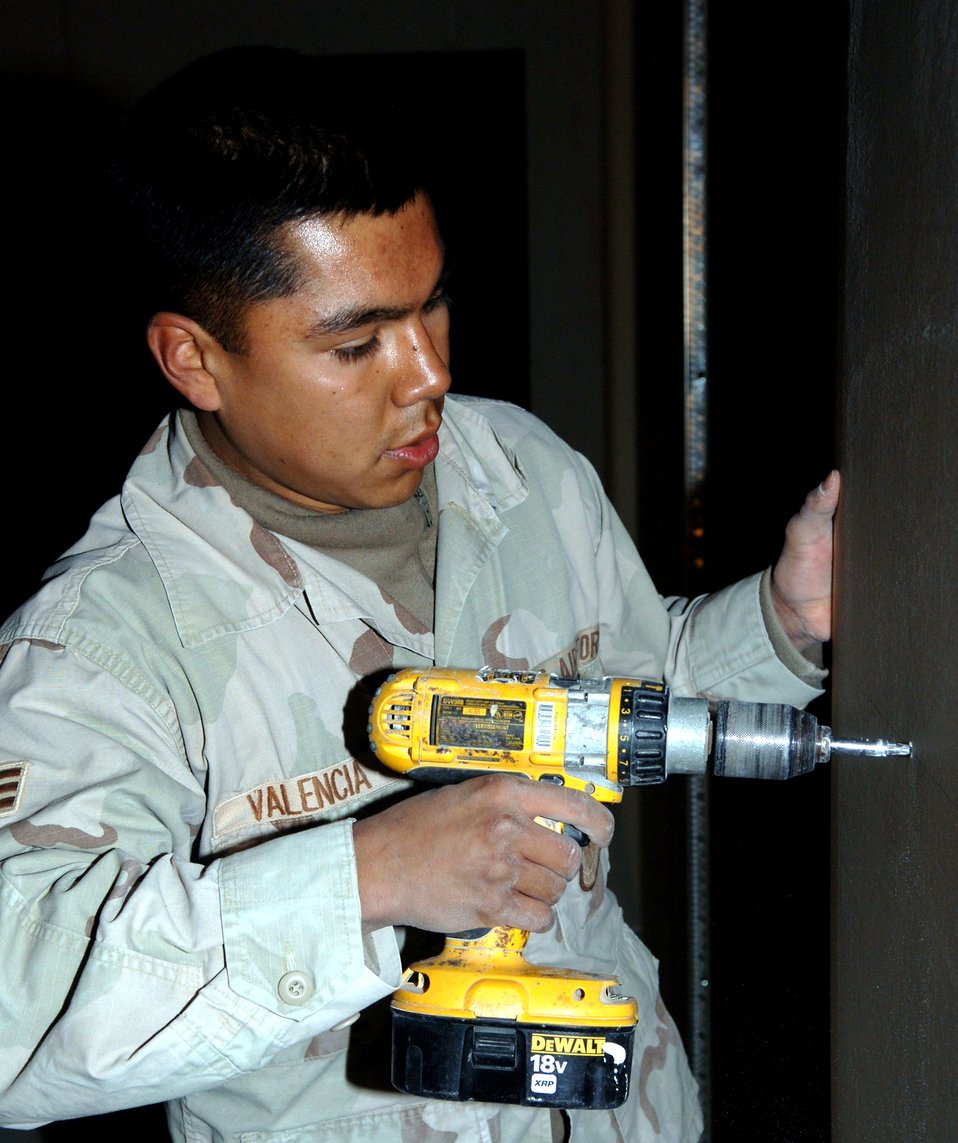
Bagram engineers

BAGRAM AIR BASE, Afghanistan (AFPN) -- Senior Airman Daniel Valencia hangs a sheet of drywall in the base's new passenger terminal. Scheduled to open early this year, the 7,750-square-foot facility can handle 300 travelers. Airman Valencia is from Cashmere, Wash. He is a structural journeyman with the 1st Expeditionary Red Horse Group deployed from Nellis Air Force Base, Nev.